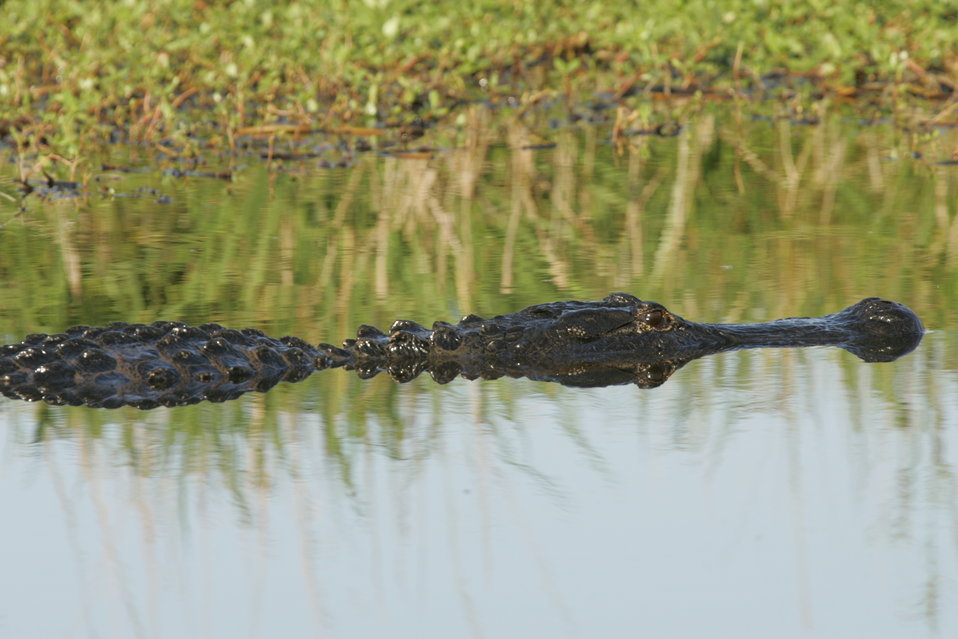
American alligator

Alligator in water to just below top of body, eyes and snout.